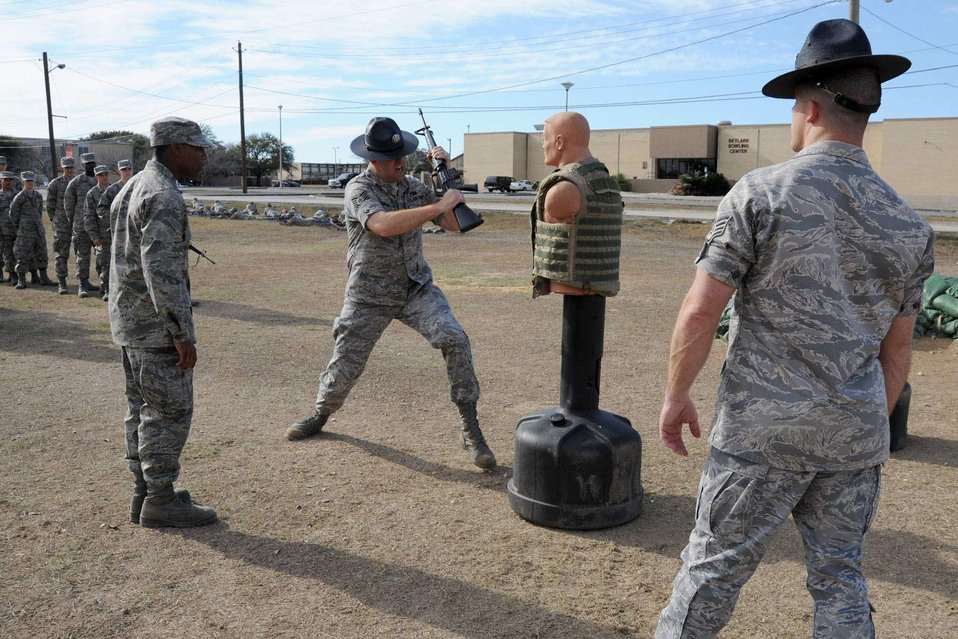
Basic Training

Basic trainees watch as a military training instructor at Lackland Air Force Base, Texas, illustrates a technique for using a rifle to strike an enemy. The extended basic training program now runs eight-and-a-half weeks, two weeks longer than the previous program.